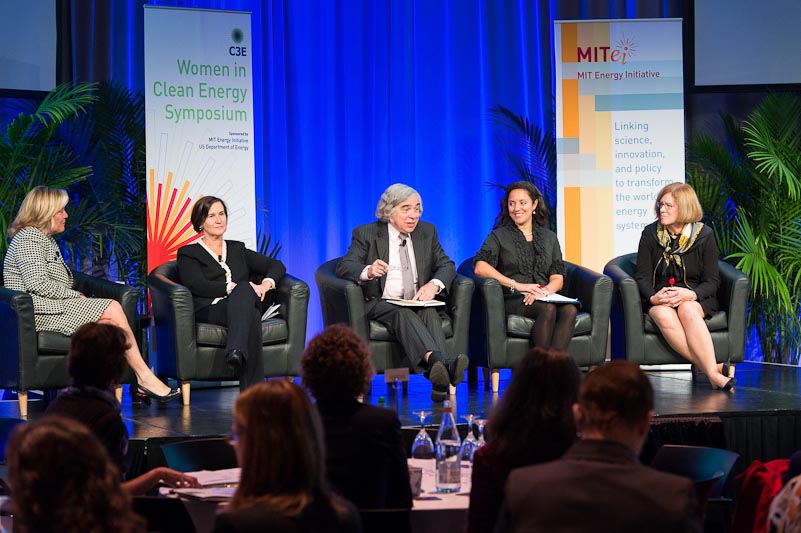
Challenges and Opportunities for Energy Policy Panel